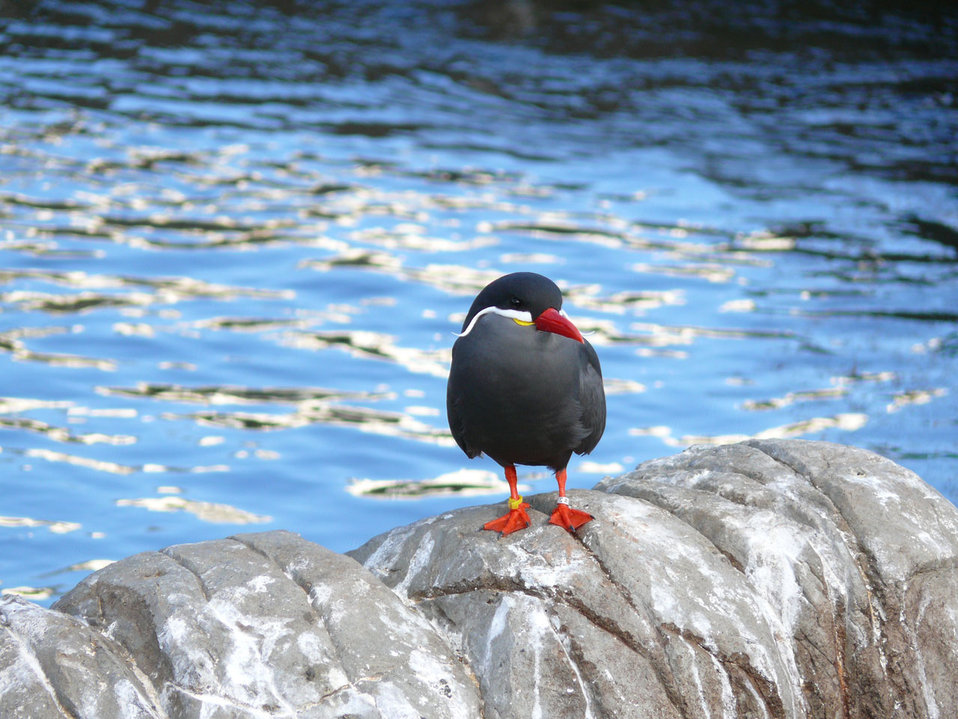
Living coast devon.